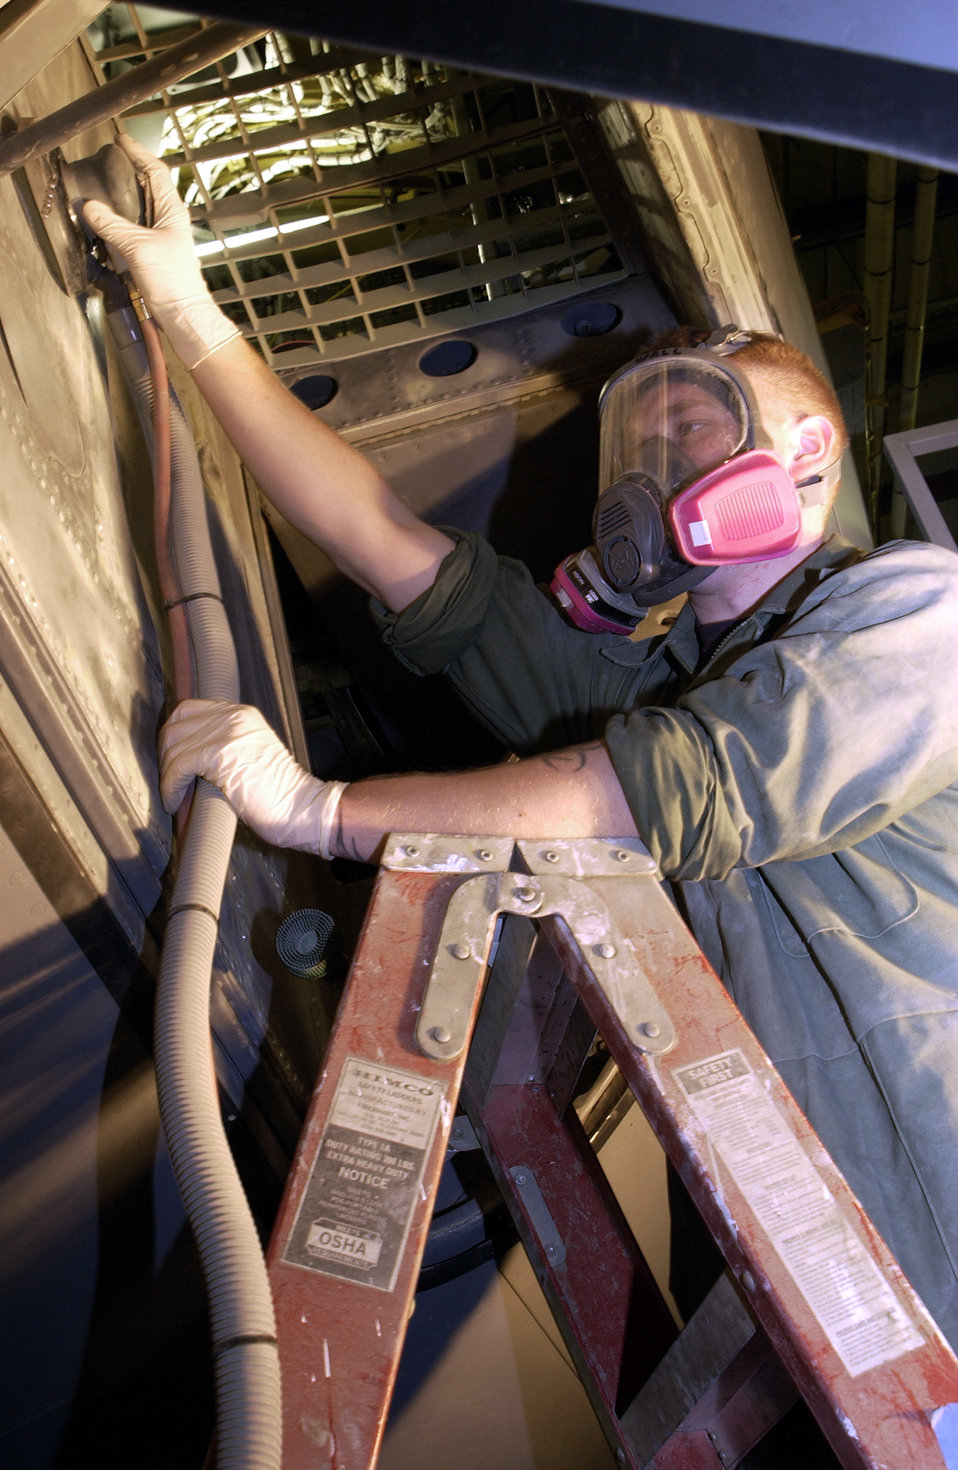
Airmen refurbish tankers

FAIRCHILD AIR FORCE BASE, Wash. -- Senior Airman Bryan Wall sands a crew entry chute before painting it. Wall is one of 14 airmen of the 92nd Maintenance Squadron's equipment excellence shop working to refurbish the interiors of aging KC-135 Stratotankers here.